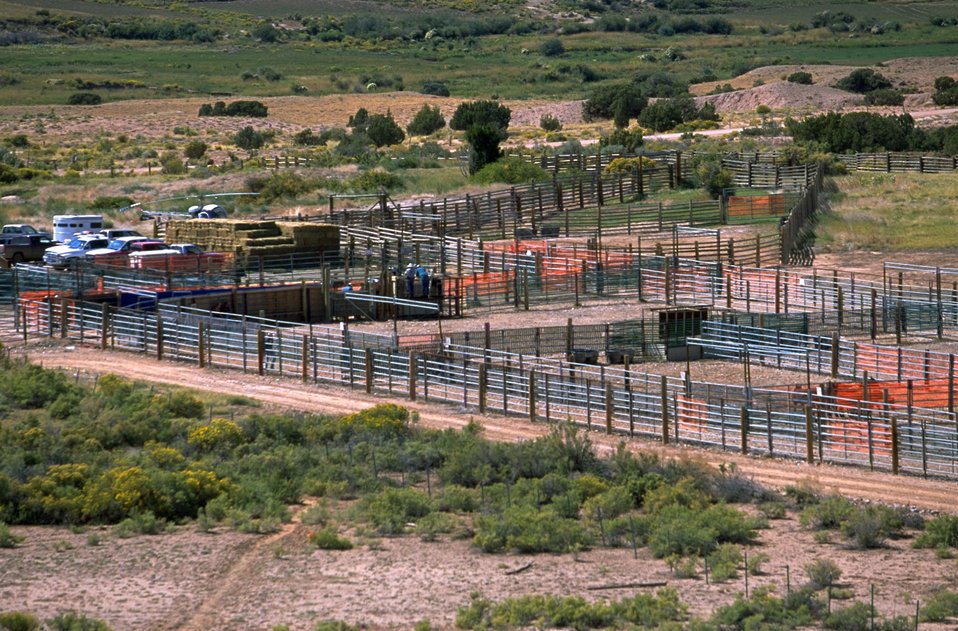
Britton Spring wild horse holding corrals